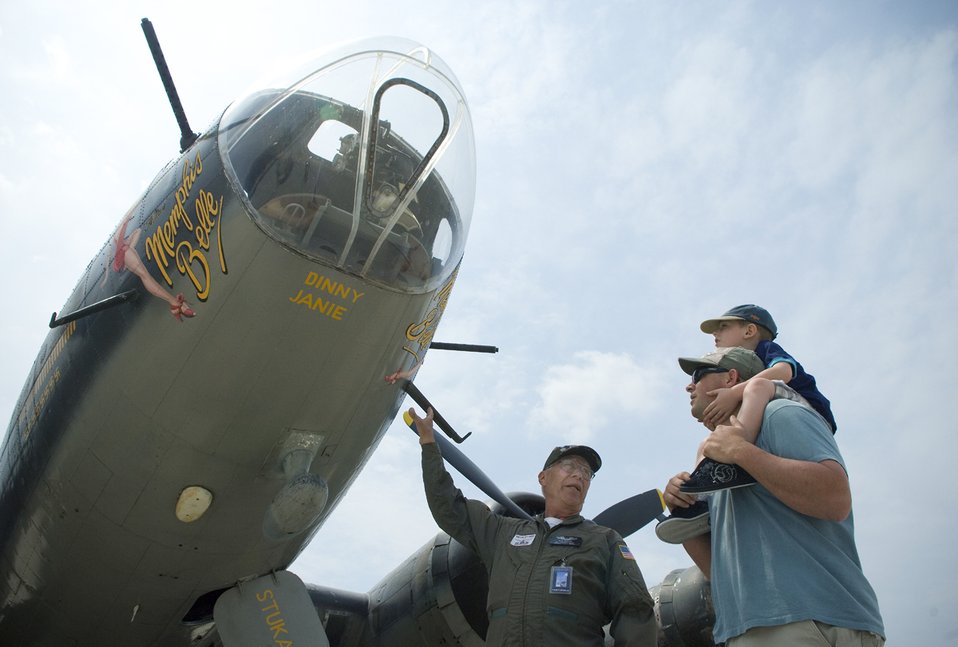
History lesson

Korean War-era veteran Bob Selden shares the history of the B-17 Flying Fortress with Jason Morris and his son, Brody, during the 2008 McGuire Air Expo May 31 at McGuire Air Force Base, N.J. Base officials hosted the air expo, which concluded Air Force Week in Philadelphia. Mr. Selden is a volunteer crew member of the